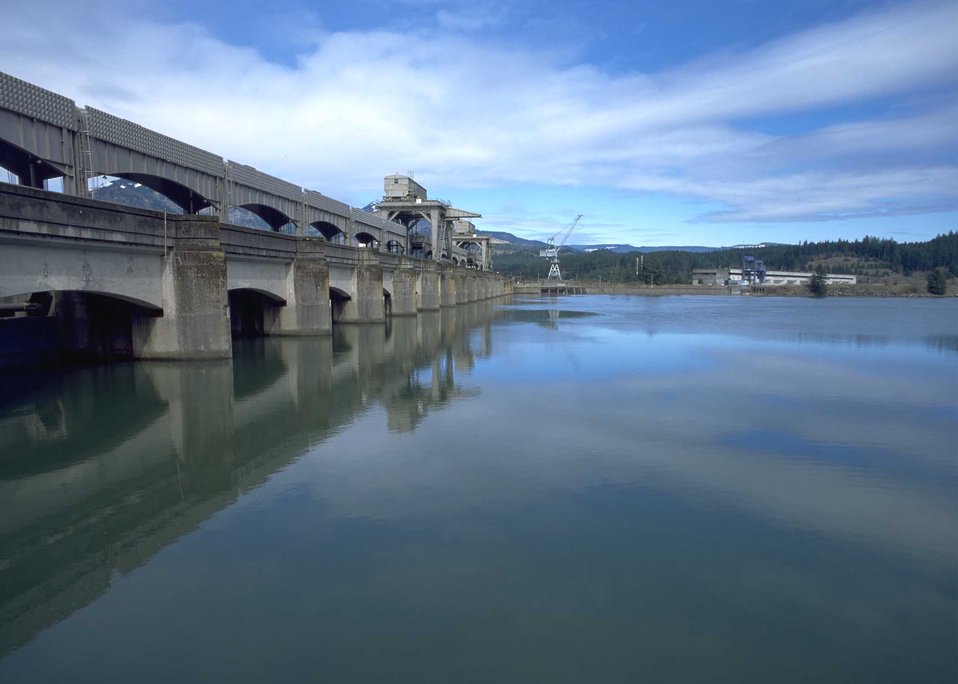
Bonneville Dam, Oregon. Many water managers use NRCS's snow survey data to manage streams and reservoirs for recreation and power use.